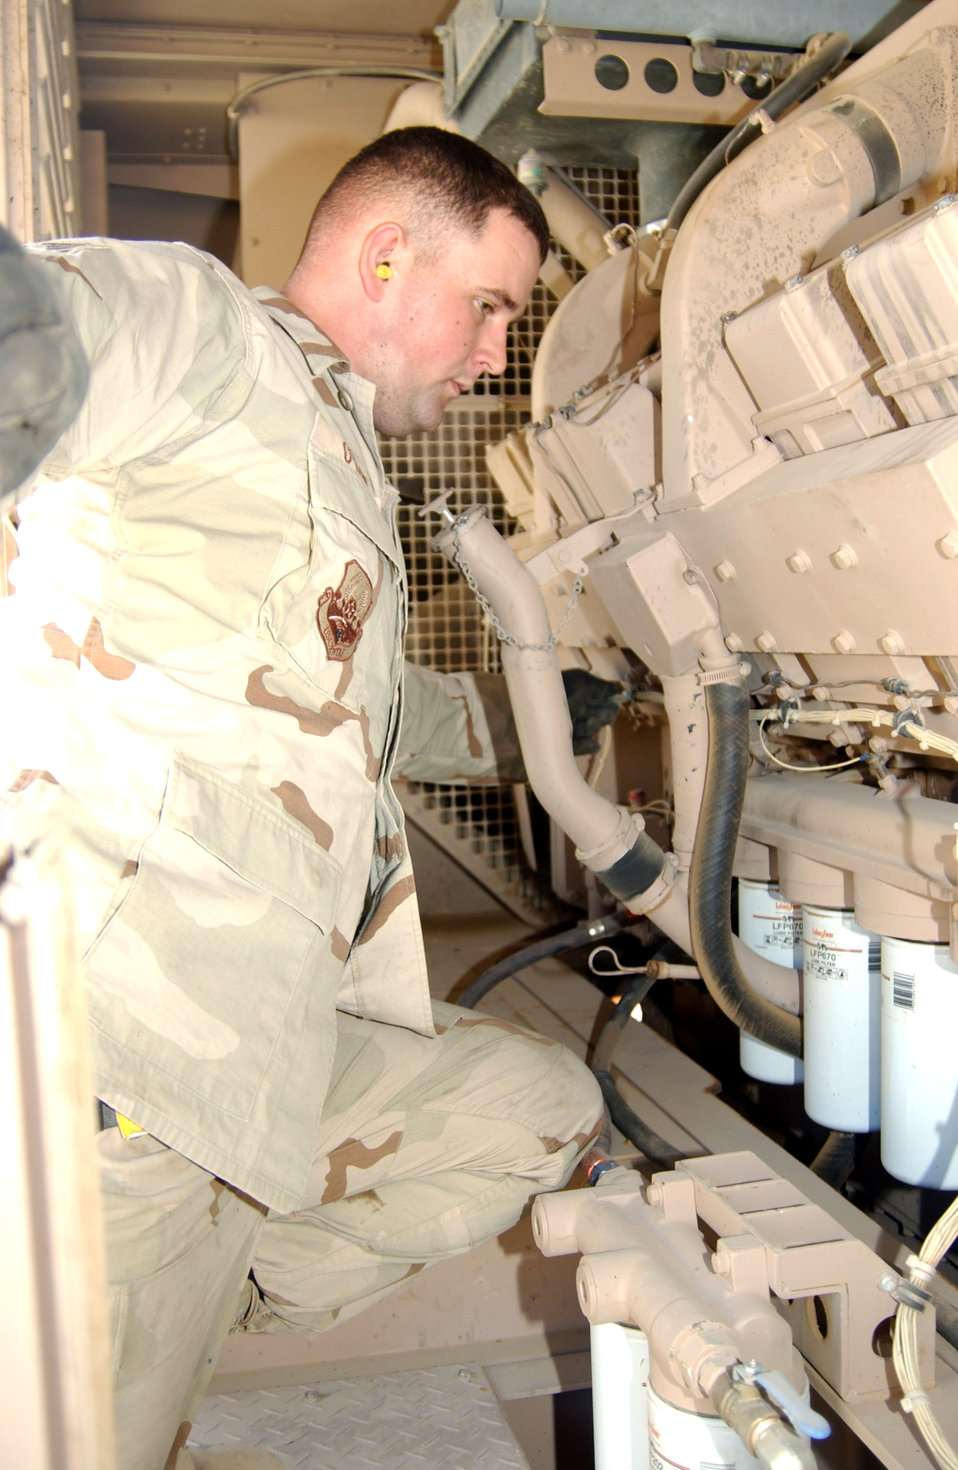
Power pros critical to mission

Staff Sgt. Kristopher Oyen checks one of the four generators that supply electricity to housing areas at Balad Air Base, Iraq. He is assigned to the 332nd Air Expeditionary Civil Engineer Squadron.